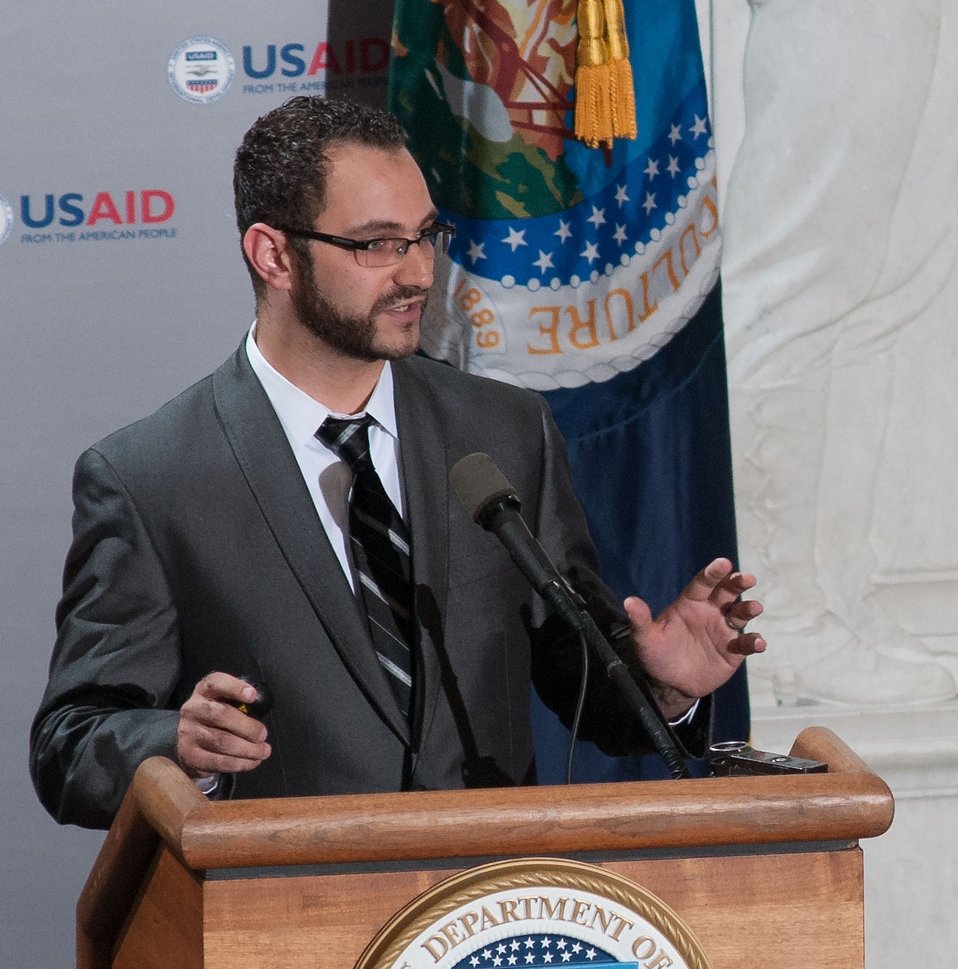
Islamic Relief USA Creative Director and Photographer Ridwan Adhami talks about the concept and preconceived notions he had before the start of his documentary project 'Scars and Smiles' and the new perspectives into the human condition he gained through the individuals he met and photographed; during the Iftar event, co-sponsored by the Iftar celebration, co-sponsored by the U.S. Department of Agriculture, U.S. Agency for International Development (USAID) and Islamic Relief USA, on Tuesday, August 7, 2012, in the USDA Whitten Building, in Washington, D.C. Ramadan is the month of fasting, intensive prayer, sacrifice and worship for Muslims around the world. Throughout this month, Muslims fast during the day, abstaining from consuming food from dawn to dusk and using this time to purify spiritually. Fasting reminds Muslims of the poverty and hunger suffered by many in the United States and worldwide. It is a connection with those who are hungry not through devotion, but through the many global factors that lead to hunger and famine. Iftar is the meal at which Muslims break their fast at sunset, usually by eating dates, according to the Prophetic tradition.